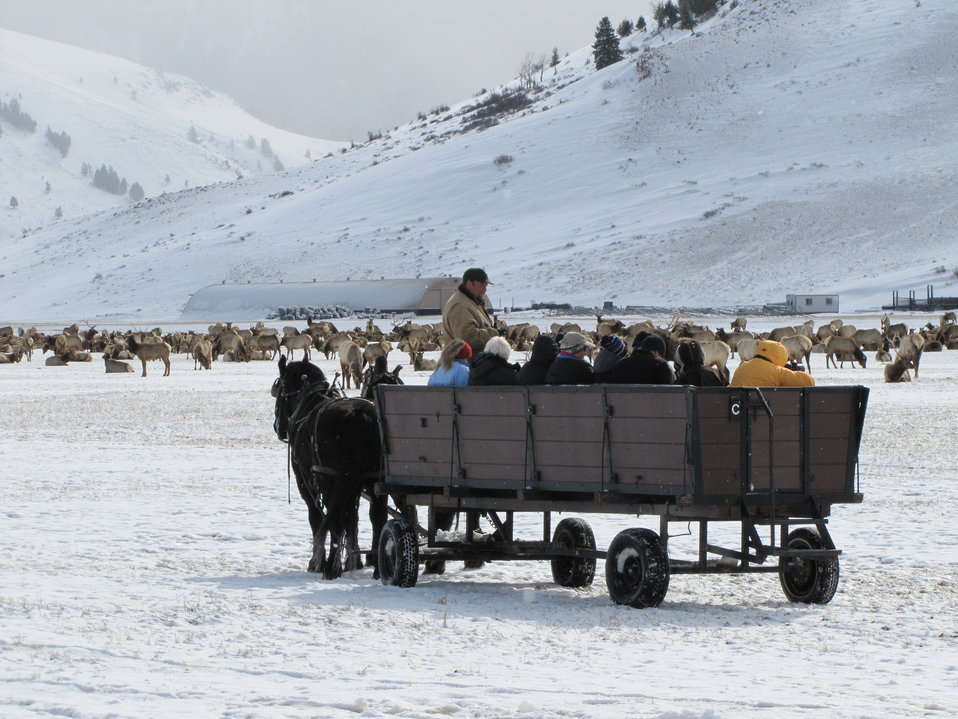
Wagons vs. Sleighs

Wagons can be substituted for sleighs when conditions are more conducive to wheeled rides. Either way, passengers have the opportunity to get close to the elk herd for wildlife viewing and photography.